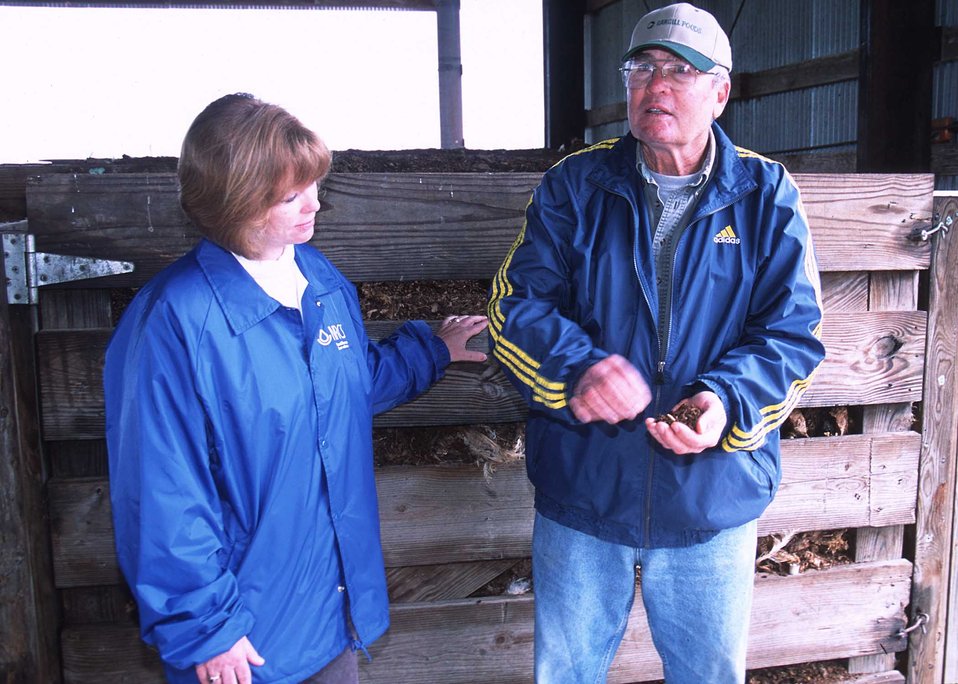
District Conservationist Rhonda Foster discussing composting from turkey manure and woodchips with cooperator in Benton, Arkansas.